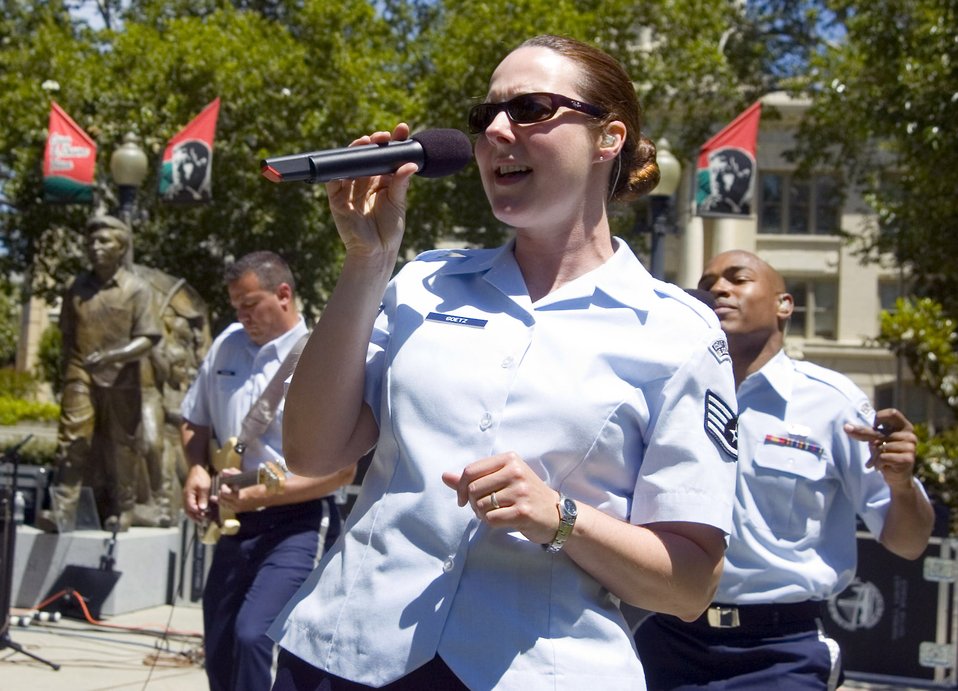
Band of the Golden West rocks downtown Sacramento

Staff Sgt. Paula Goetz of the Air Force Band of the Golden West from Travis Air Force Base, Calif., sings in the Cesar Chavez Plaza as part of Air Force Week June 7 in Sacramento, Calif.